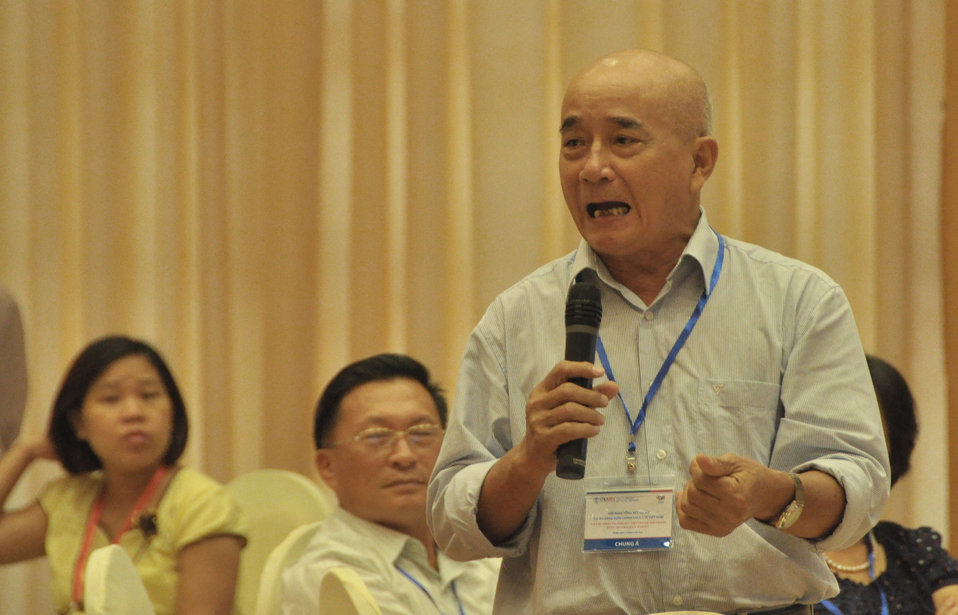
USAID Health Policy Initiative End of Project Workshop

Hanoi, August 14, 2013.